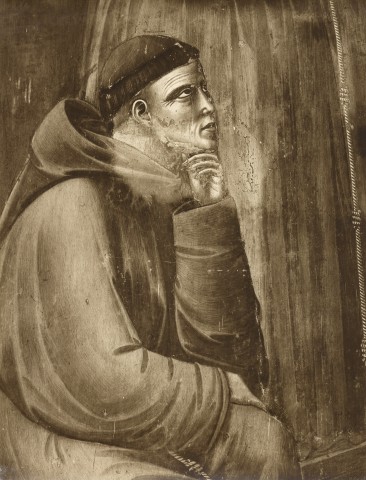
'giotto', Apparizione di san Francesco d'Assisi al capitolo di Arles 01